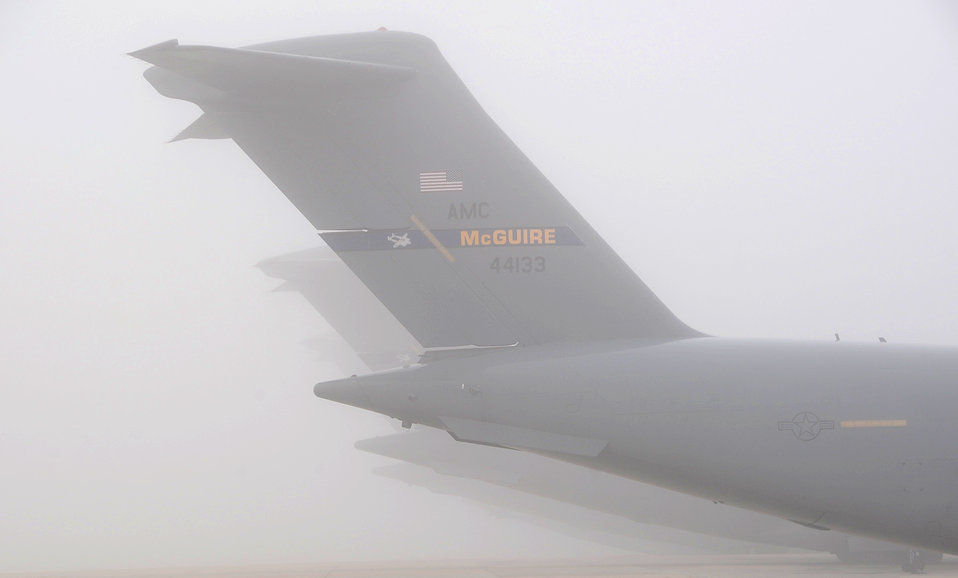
Hightail it

On a fog-covered flightline, Airmen from Joint Base McGuire-Dix-Lakehurst, N.J., load and secure equipment onto aircraft in preparation for Hurricane Irene on Aug. 26, 2011. All JB McGuire aircraft were evacuated to Air Force bases around the country.